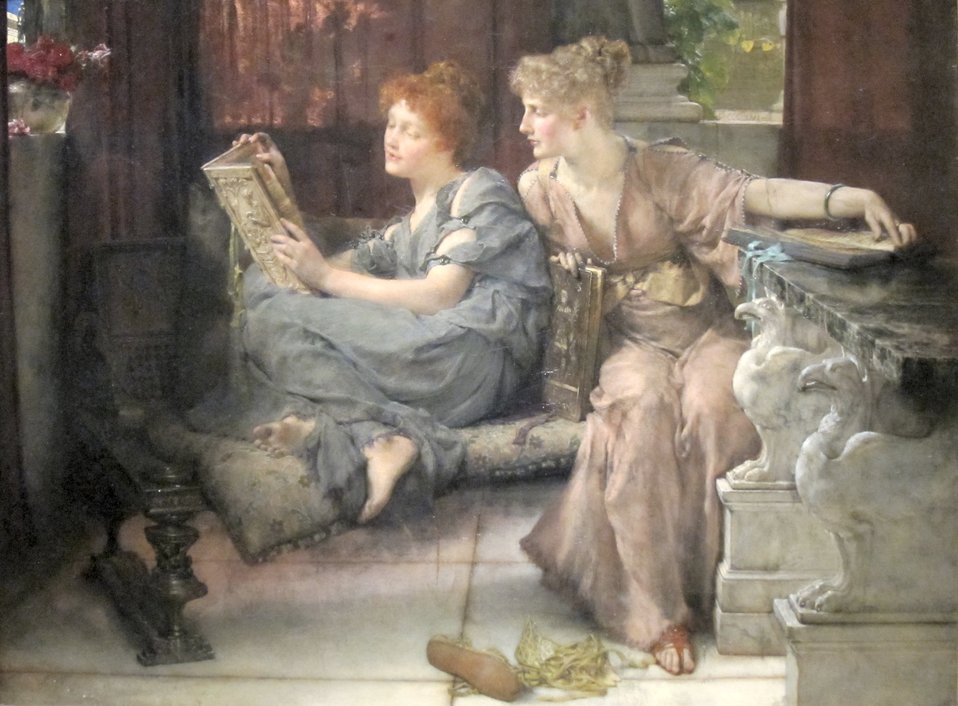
'Comparison' by Lawrence Alma-Tadema, Cincinnati Art Museum